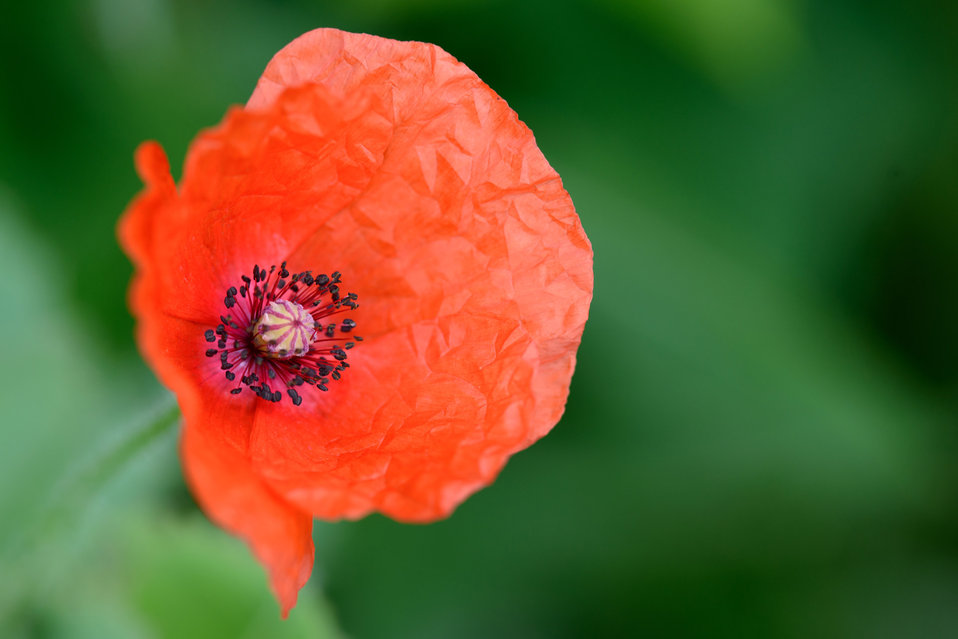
Red poppy.